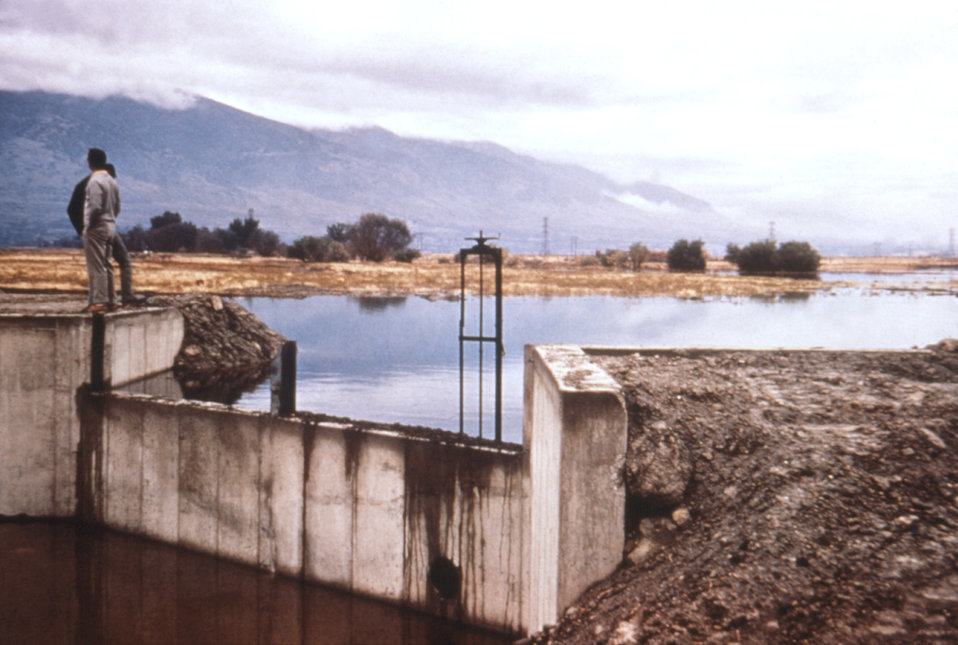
This 1976 photograph shows the concrete flood gate of a water reservoir in a mountainous region of Utah.